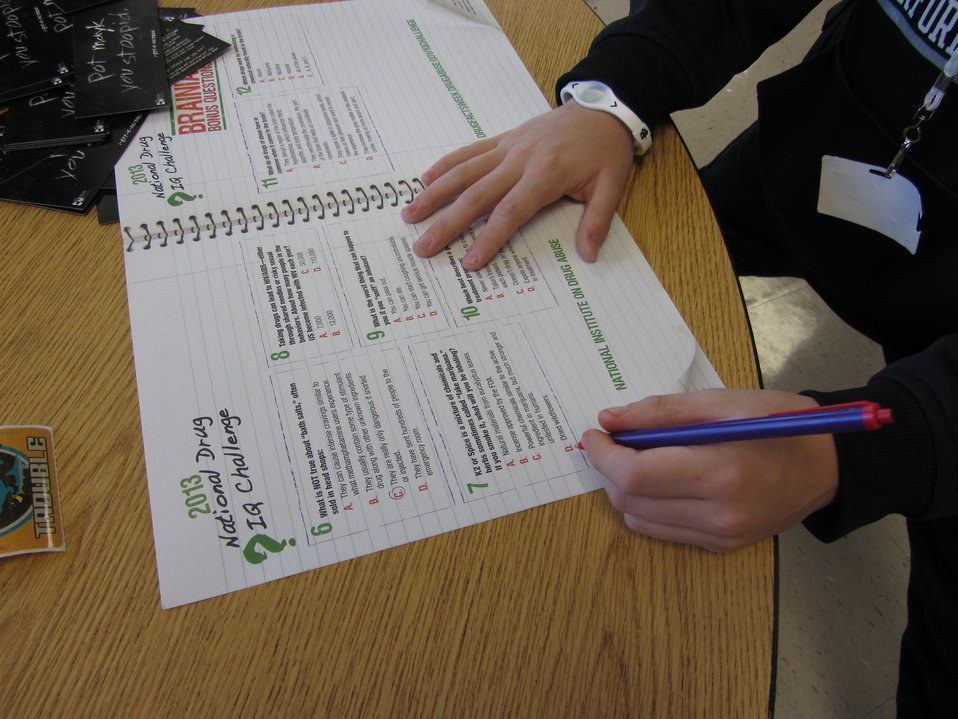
Drug IQ Challenge, NDFW 2013

Galveston City, Tex. Galveston County Community Coalition hosted National Drug Facts Week 2013.